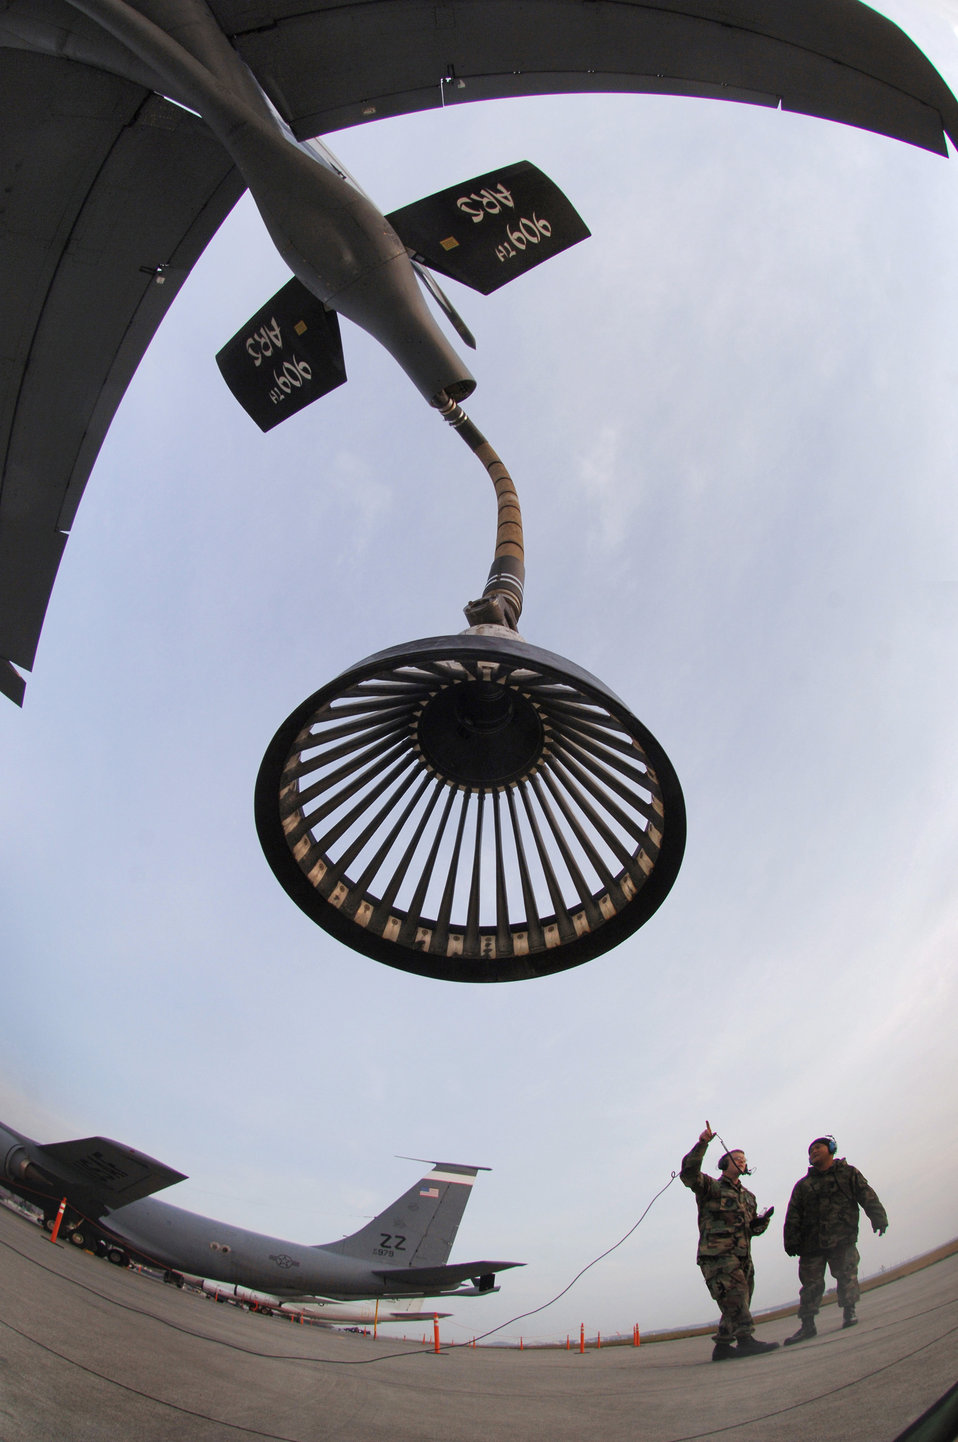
Tanker check

YOKOTA AIR BASE, Japan (AFPN) -- Senior Airman James Taimanglo, right, and Staff Sgt. Gene Pietro inspect a KC-135 Stratotanker aircraft before a morning sortie during exercise Cope North 2005. Cope North is designed to enhance U.S. and Japanese air operations. Both Airmen are from the 718th Aircraft Maintenance Squadron at Kadena Air Base, Japan.